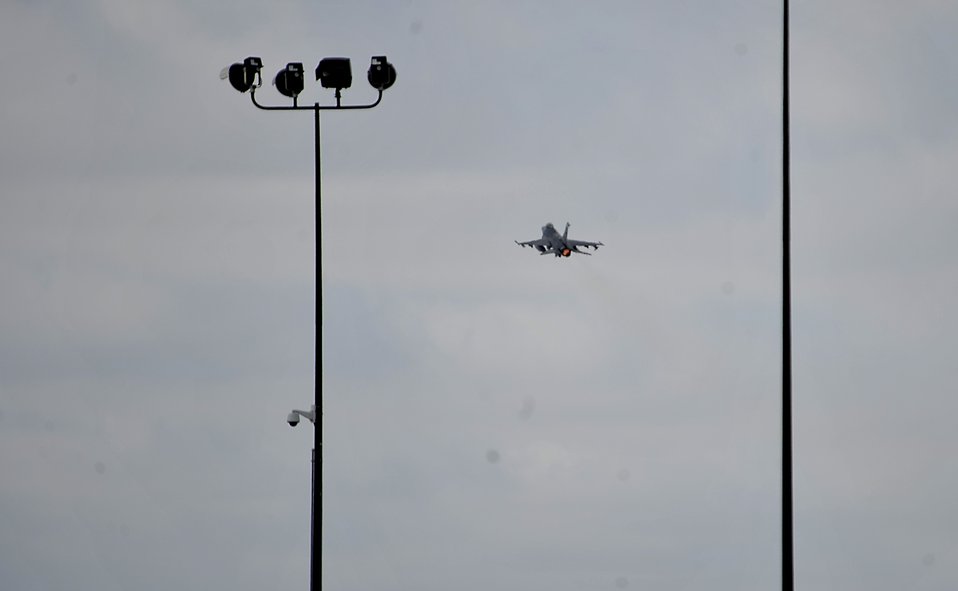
Ohio Air National Guard Base fuels test

An F-16 Fighting Falcon takes off for a trainng mission Feb. 12, 2012 from Ohio Air National Guard Base. The F-16 is one of two being fueled with a 50/50 conventional and biofuel blend as part of a field service evaluation. The jet is assigned to the 180th Fighter Wing.